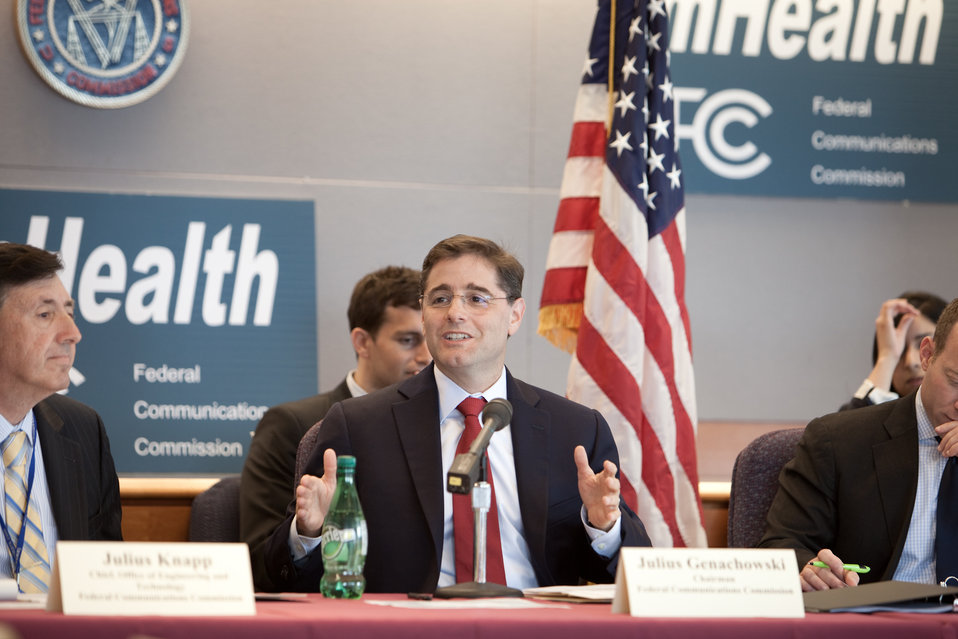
FCC Chairman Genachowski speaking about mHealth.

June 6, 2012 - FCC Headquaters | Washington, DC